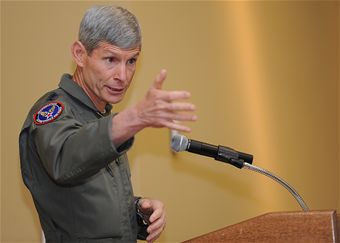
CSAF's

Air Force Chief of Staff Gen. Norton Schwartz speaks to members of the Air Force Association and the Air Commando Association at Hurlburt Field, Fla., July 12, 2012. Schwartz visited the base to meet with Air Force Special Operations Command leaders and airmen. During the visit, he flew his last flight as an active duty officer on an MC-130E Combat Talon I. The MC-130E crew conducted a local training sortie during the mission. It also served as Schwartz's